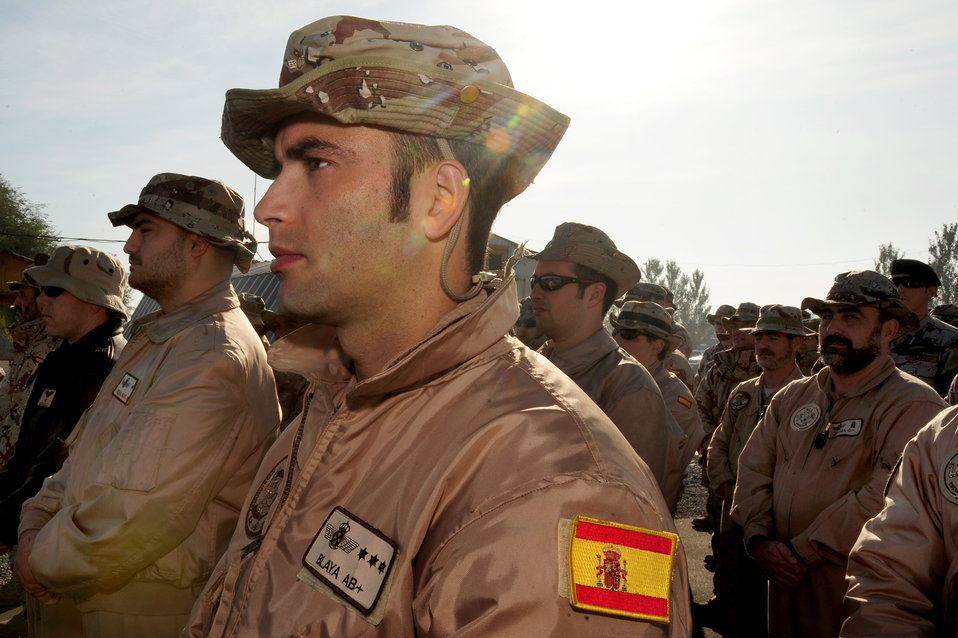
Airmen bid farewell to Spanish forces at Transit Center at Manas

Spanish air force servicemembers stand in formation during a remembrance ceremony for fallen comrades since the start of Operation Enduring Freedom Oct. 13, 2009, at the Transit Center at Manas, Kyrgyzstan. The Spanish Mizar Detachment marked the end of a tour by conducting a lowering of the Spanish flag signifying a halt in service at the Transit Center.